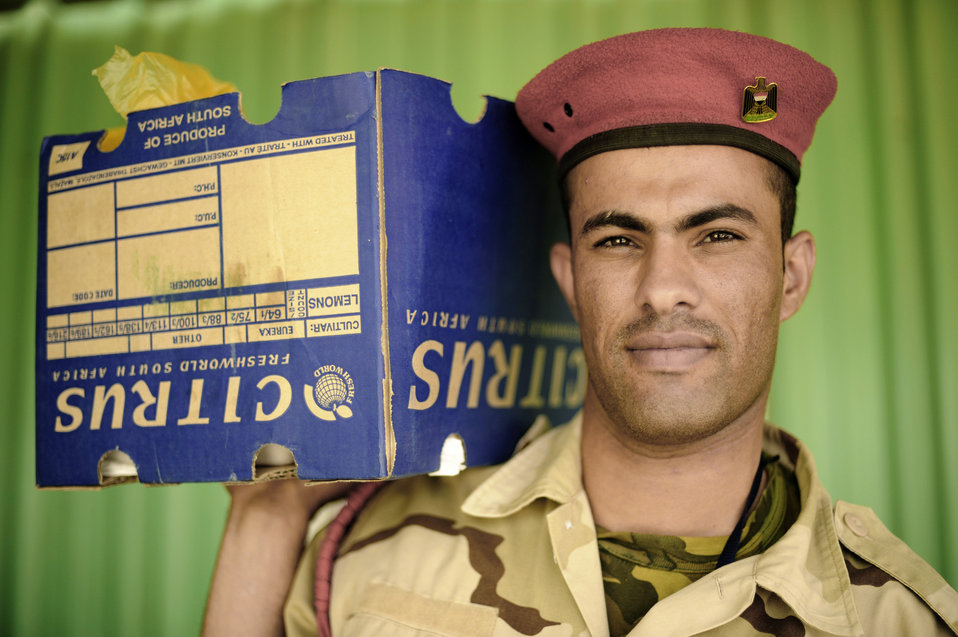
Airmen step back as Iraqis take control of mission support

An Iraqi soldier carries a box of food from an Iraqi dining facility for his fellow soldiers pulling guard duty July 12 at Camp Taji, Iraq. This dining facility is run exclusively by the Iraqi army with some assistance from an American Airman assigned to the Logistics Military Adviser Team.